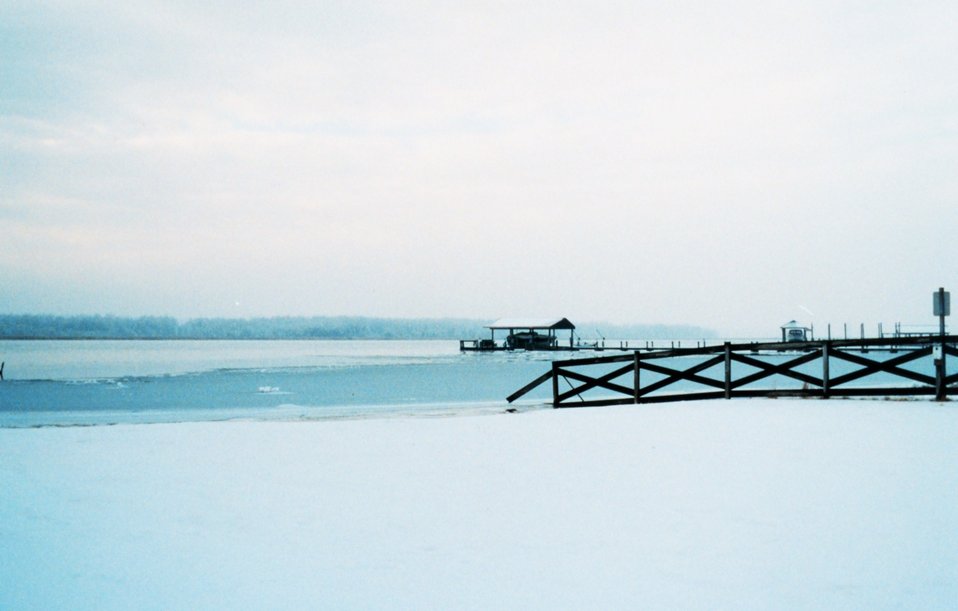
A wintry vista along a frozen snow-covered Patuxent River